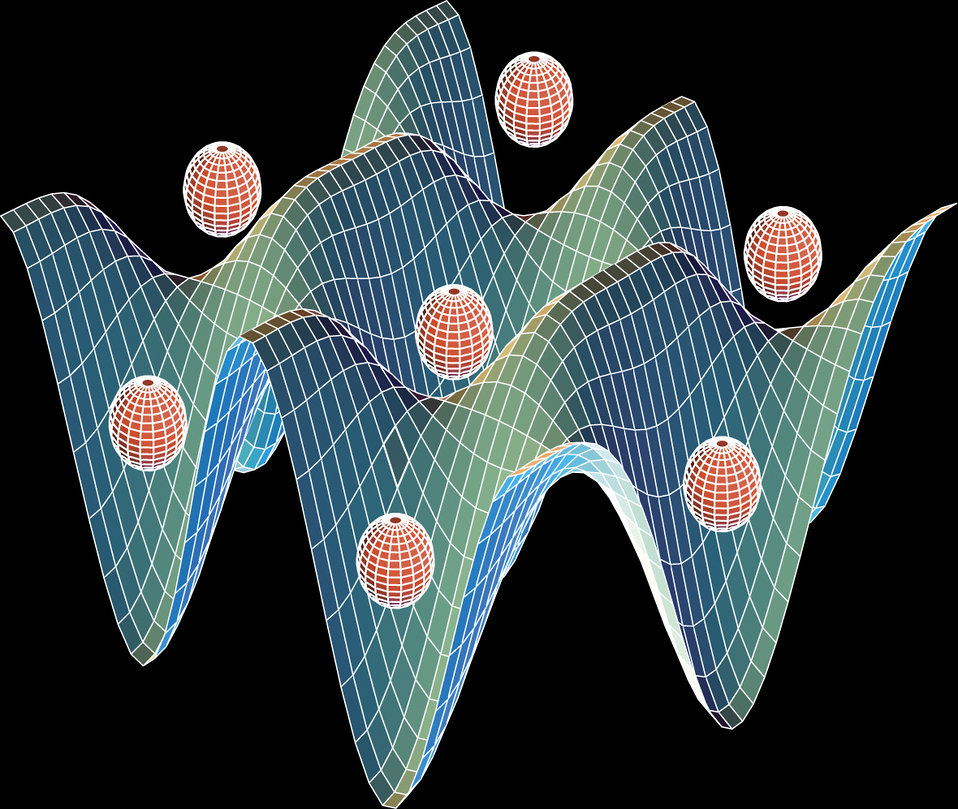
Optical lattice

This illustration shows how neutral atom qubits can be trapped in an optical lattice made of intersecting laser beams.

Courtesy: NIST